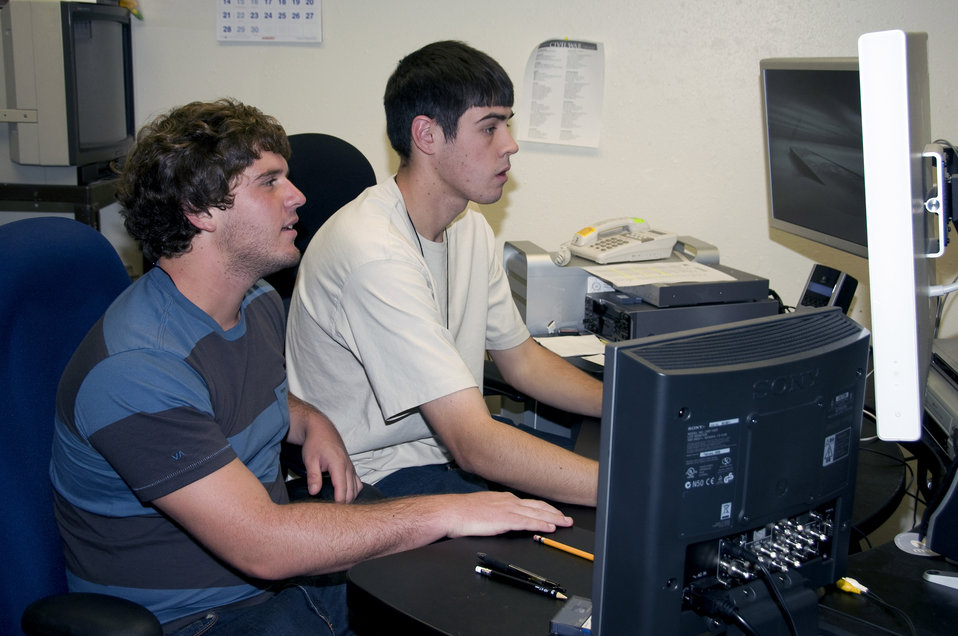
AFOTEC launches student intern program

Calum Murray (left) and Ethan Halliday work on editing film footage as part of their duties as student interns with the Air Force Operational Test and Evaluation Center at Kirtland Air Force Base, N.M. AFOTEC is partnering with the University of New Mexico for the program aimed at recruiting and training candidates for potential future employment opportunities.